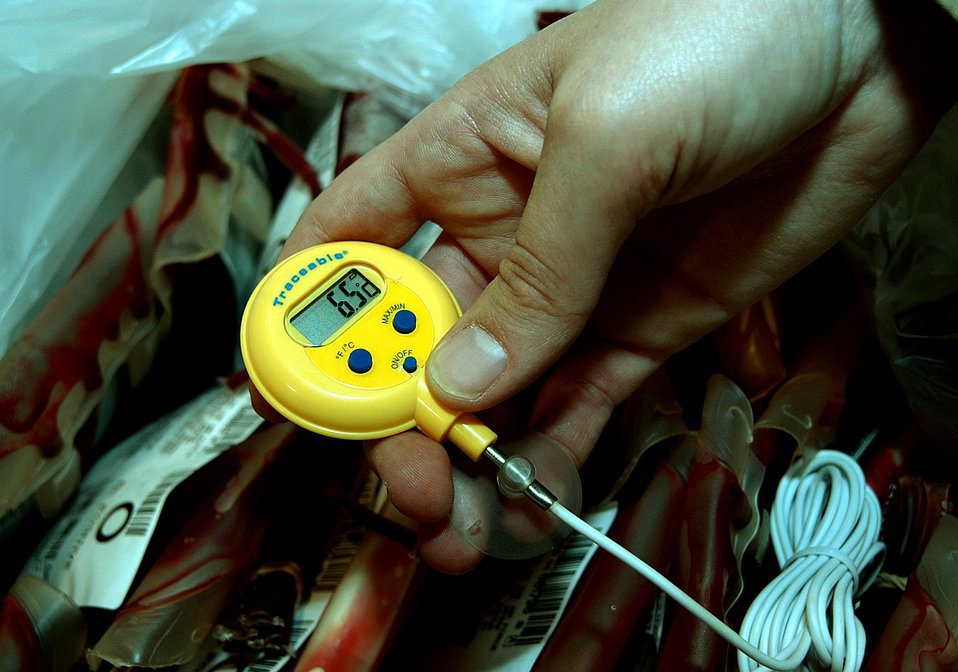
Blood Supply

AL UDEID AIR BASE, Qatar -- A member of the blood transshipment center staff takes a temperature reading of 6.5 degrees Celsius on a box of blood before it is stored. The temperature must remain between 1 and 10 degrees Celsius while it is being catalogued. When it is shipped, blood is packed in plastic foam and ice until it gets to the appropriate place, where it is then refrigerated until needed.